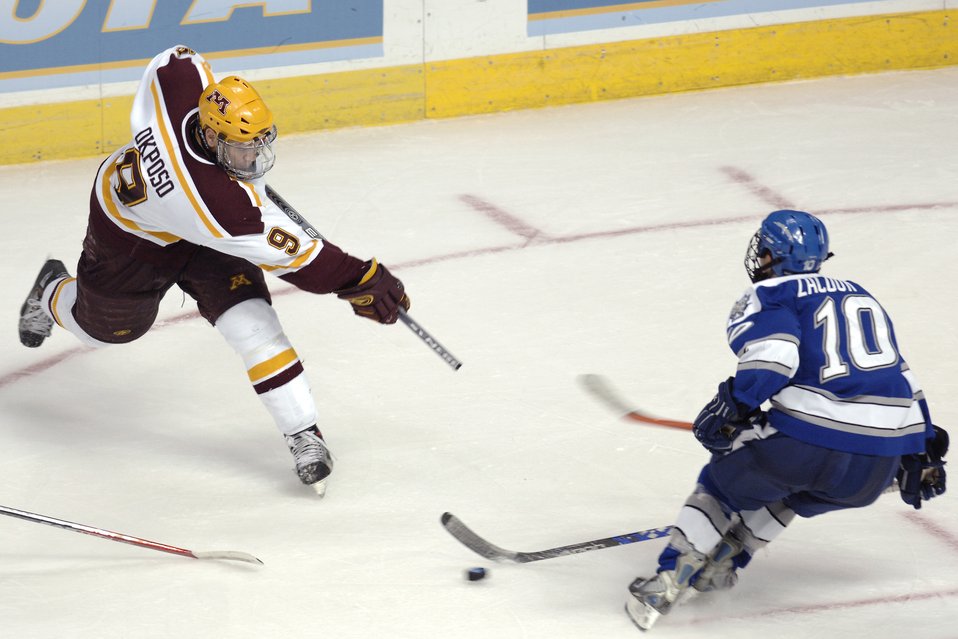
Gophers ground Falcons season during third period rally

Minnesota center Kyle Okposo breaks his stick taking a slap shot in front of Falcon Theo Zacour during the NCAA West Regional March 24 at the Pepsj Center in Denver. Zacour is one of eight senior Falcons to graduate this year.